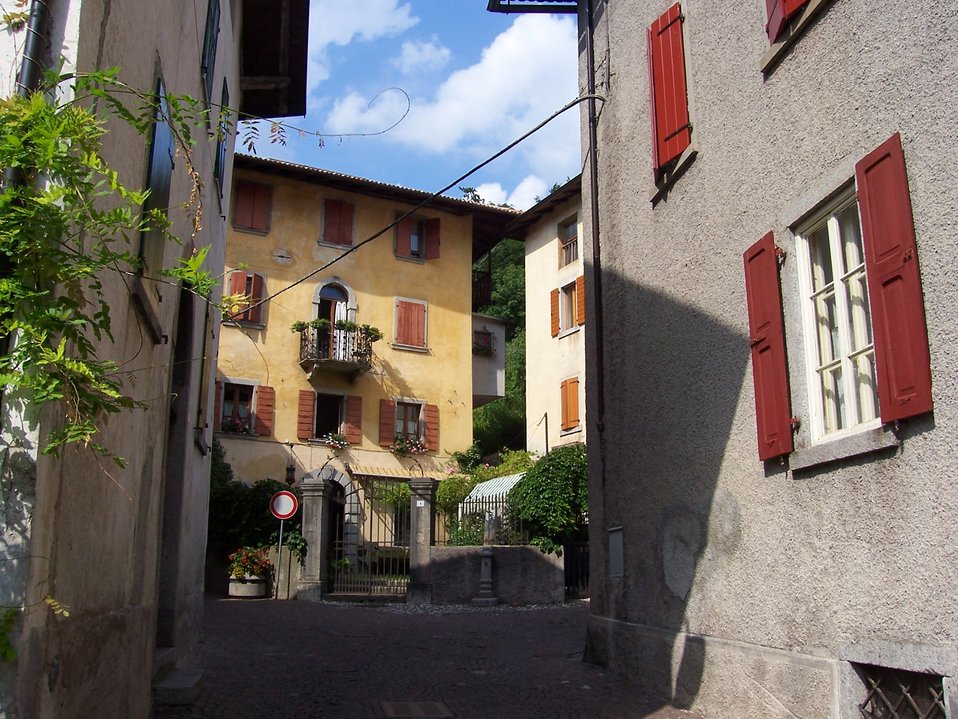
Italiano: Cadria fotografia interno di Bezzecca pubblico dominio